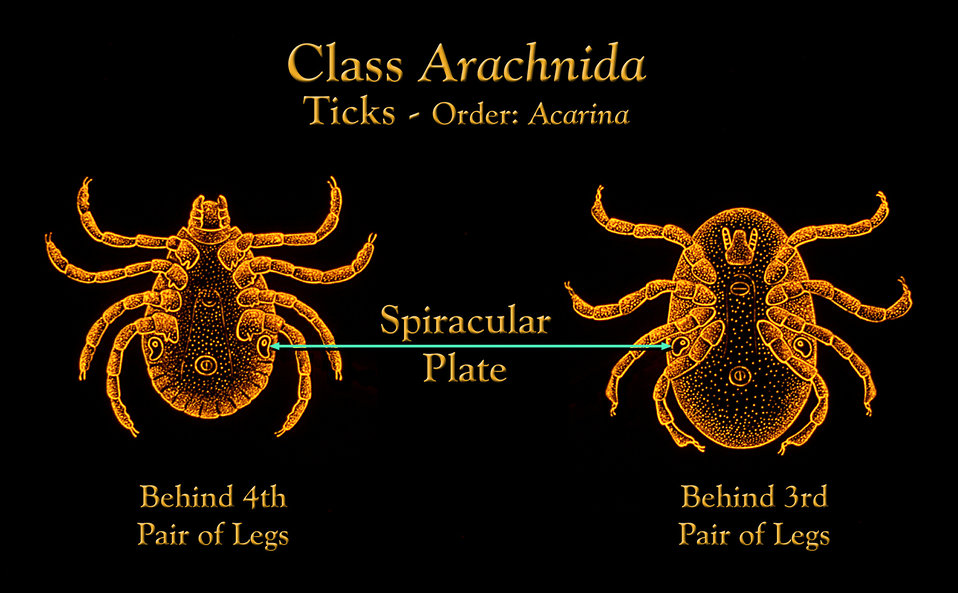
This illustration depicts the location of a tick's breathing orifices each contained in a hard chitinous 'spiracular plate'.